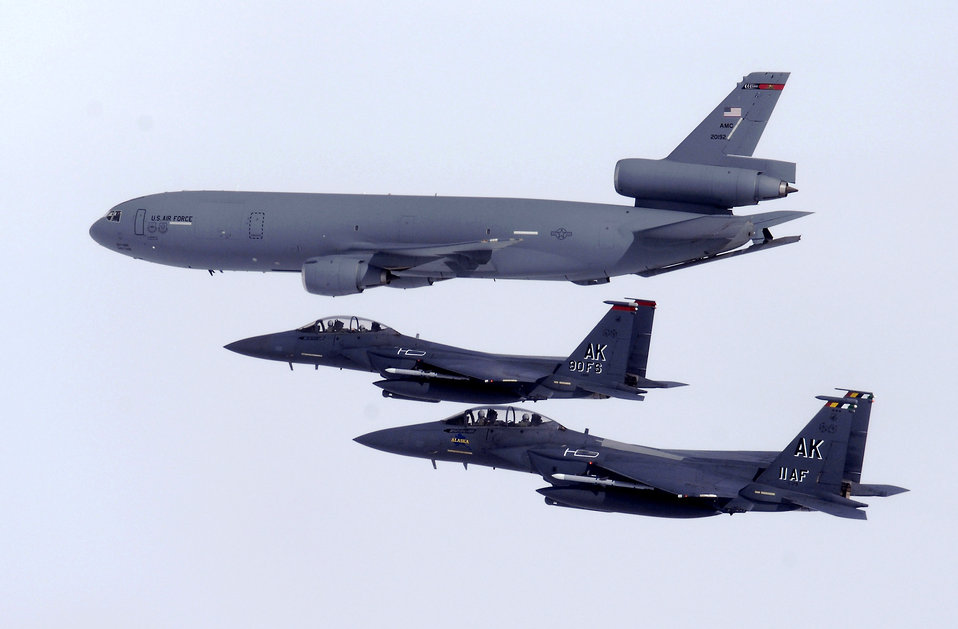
Alaskan Eagles

Two F-15E Strike Eagles fly alongside a KC-10 Extender April 20 over Alaska. The F-15E is assigned to the 90th Fighter Squadron at Elmendorf Air Force Base, Alaska, which traces its history back to August 1917. The F-15E at Elmendorf AFB will soon be replaced by the F-22 Raptor. The KC-10 is from Travis Air Force Base, Calif.